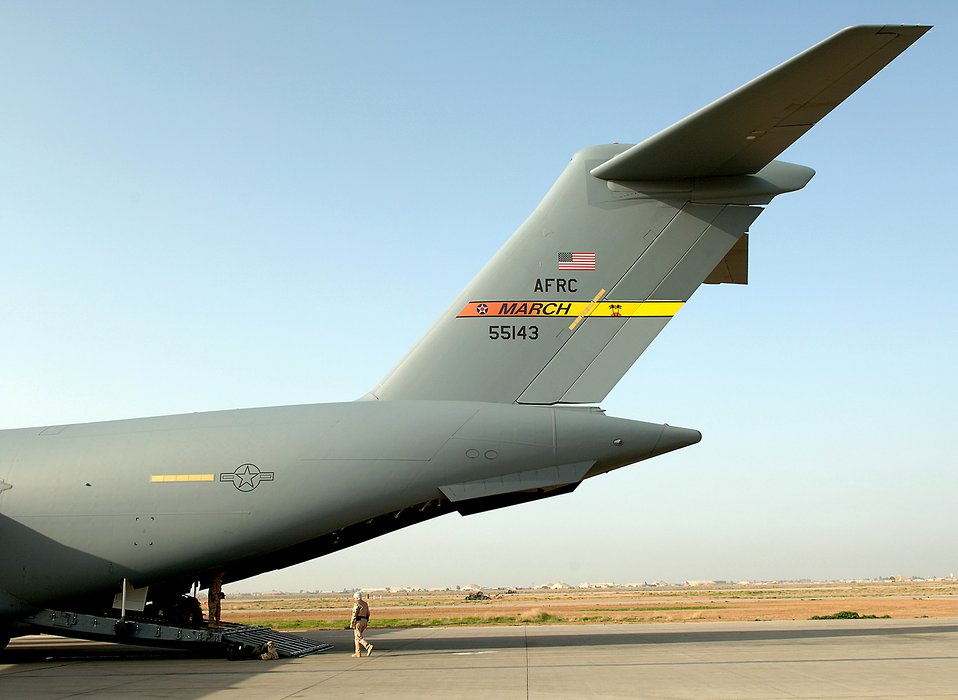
Reserve Airmen contributing to medical mission in Iraq

Flight surgeon Lt. Col. Nina Gilbergat is dwarfed by a C-17 Globemaster III as she prepares to walk up the ramp door before an aeromedical evacuation mission from Balad Air Base, Iraq to Landstuhl Regional Medical Center in Germany. Colonel Gilbergat is assigned to the 332nd Contingency Aeromedical Staging Flight.The Globemaster is from March Air Reserve Base, Calif.